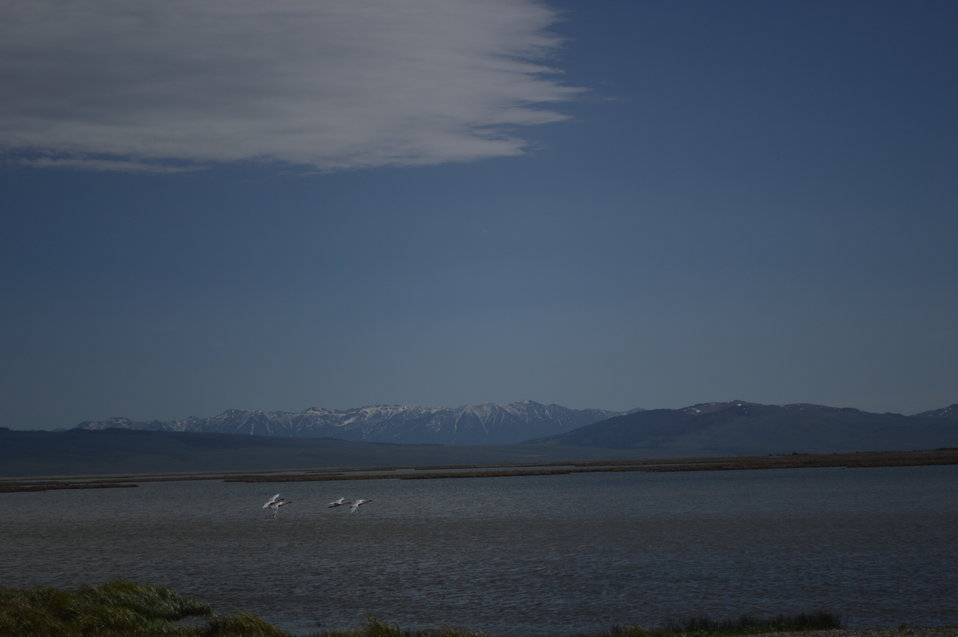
Regional Leadership Visit to Montana 2014